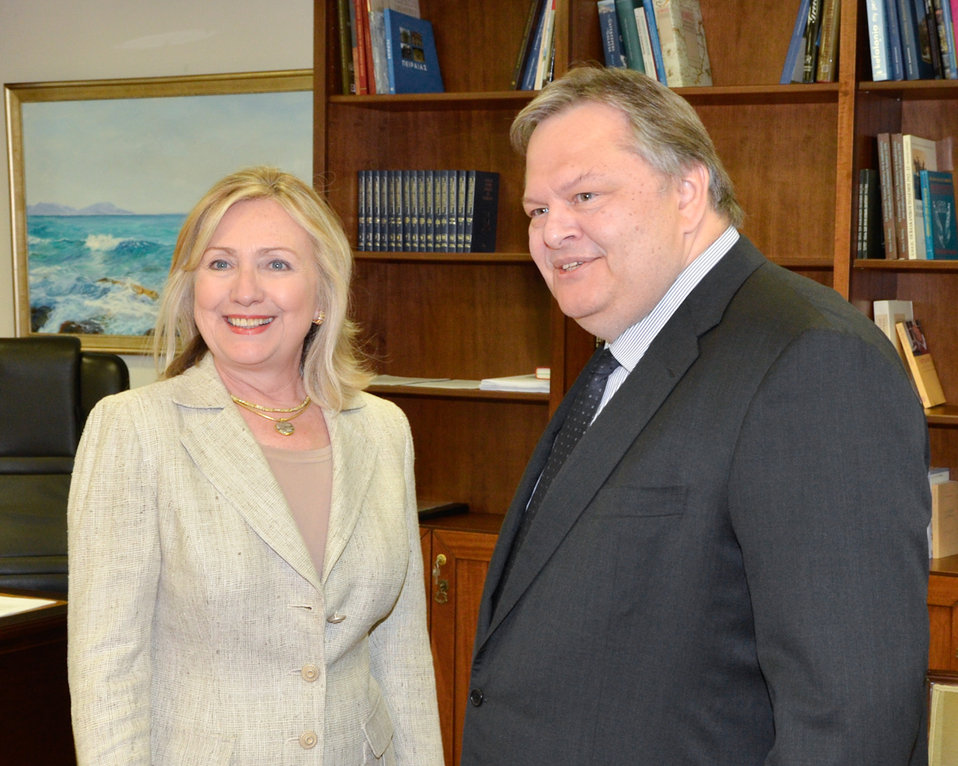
Secretary Clinton Poses for a Photo With Greek Foreign Minister Venizelos

U.S. Secretary of State Hillary Rodham Clinton poses for a photo with Greek Finance Minister Evangelos Venizelos in Athens, Greece, on July 17, 2011.